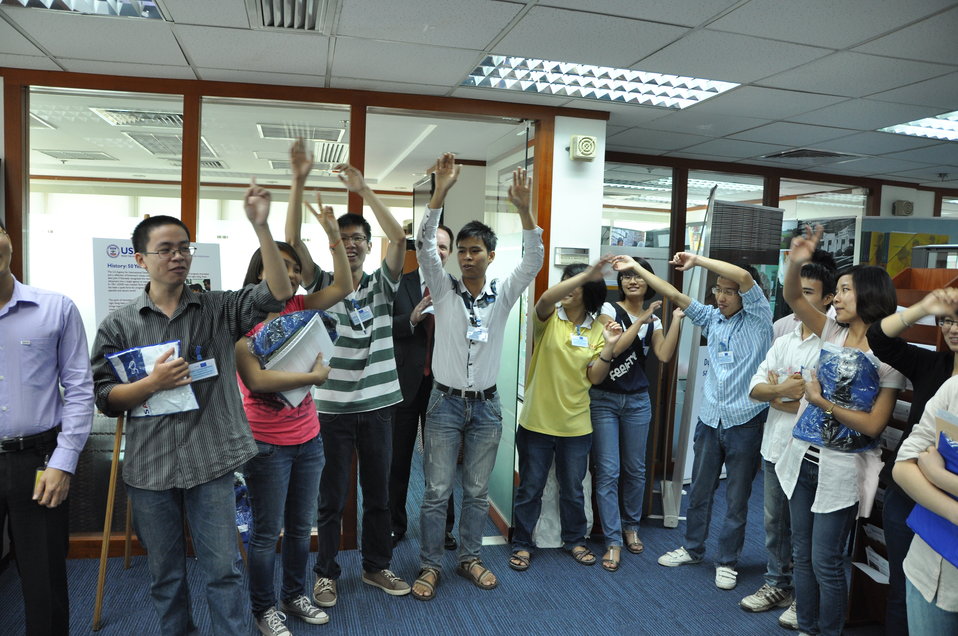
USAID Vietnam Open House, November 3, 2011